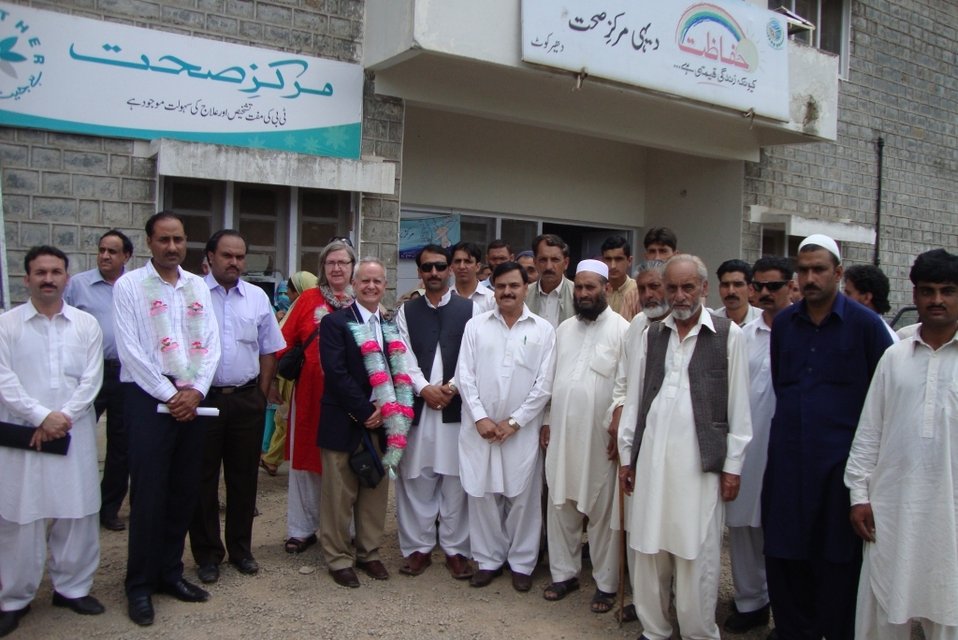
After groundbreaking at Dhirkot Hospital